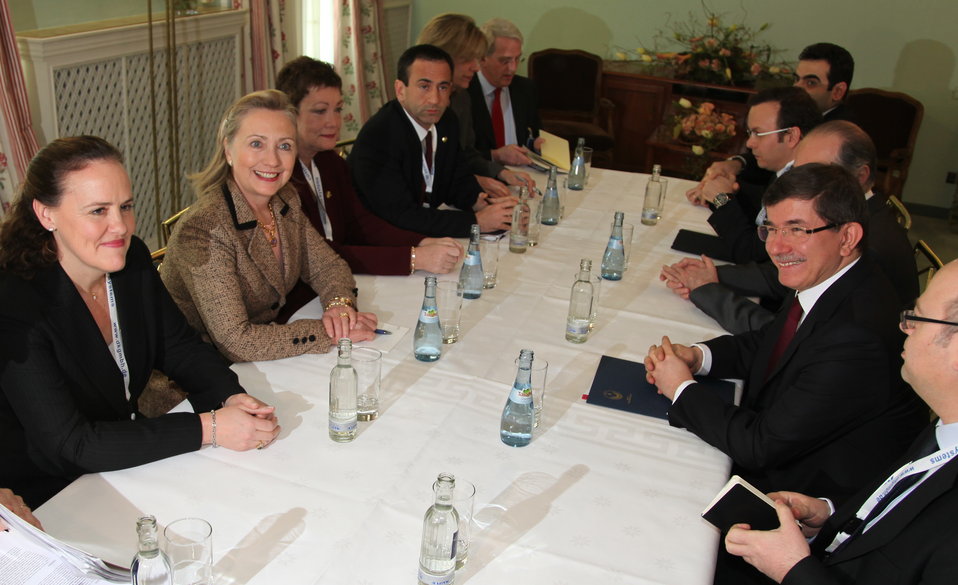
Secretary Clinton Holds a Bilateral Meeting With Turkish Foreign Minister Davutoglu

U.S. Secretary of State Hillary Rodham Clinton holds a bilateral meeting with Turkish Foreign Minister Ahmet Davutoglu in Munich, Germany, on February 5, 2011.